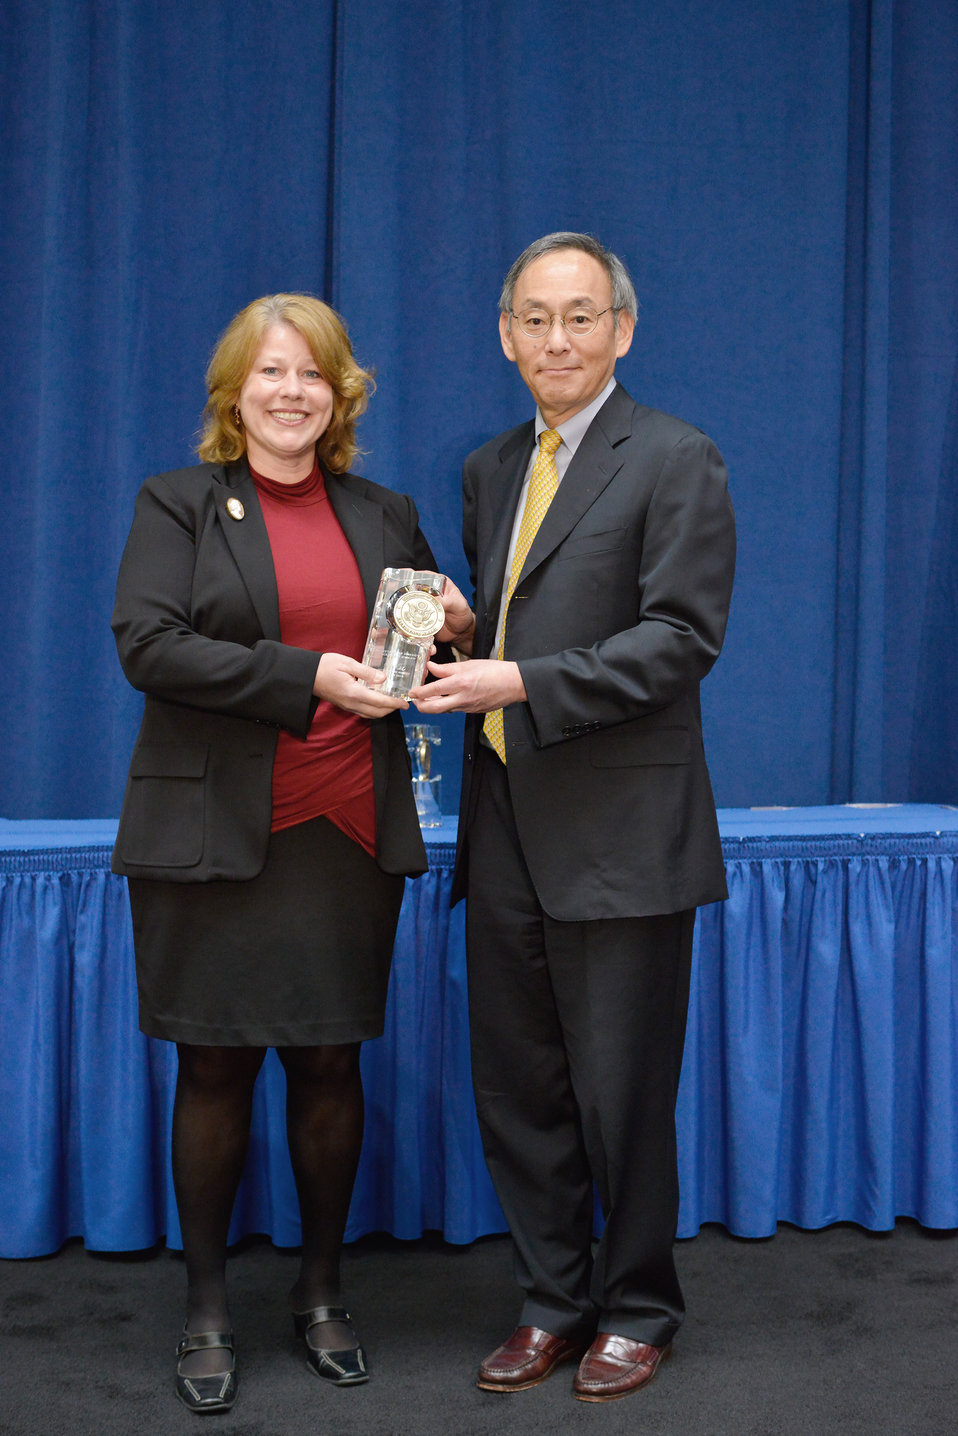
Excellence Award - Dr. Jehanne E. Gillo

Dr. Jehanne E. Gillo, Director, Facility and Project Management Division, Office of Science is the recipient of a Secretarial Excellence Award. Dr. Jehanne Gillo is recognized for her exceptional leadership, inspired vision, and highly skilled management in executing a major restructuring of the Department of Energy Isotope Program to better serve the Nation's needs for stable and radioactive isotopes. Dr. Gillo’s efforts established clear roles and responsibilities within three well defined portfolios (Isotope Facilities, Isotope Research, and Stable Isotopes and Accountable Materials) and recognized the need to align the isotope program with the mission of the Office of Nuclear Physics as well as the critical need to invest in isotope research. Dr. Gillo instilled a new sense of urgency and mission and positioning this important Department of Energy program at the center of America's isotope stakeholder communities; coordinated strategic planning activities; and proactively promoted communication among national, international, and inter-agency stakeholders from industry, government, and research.